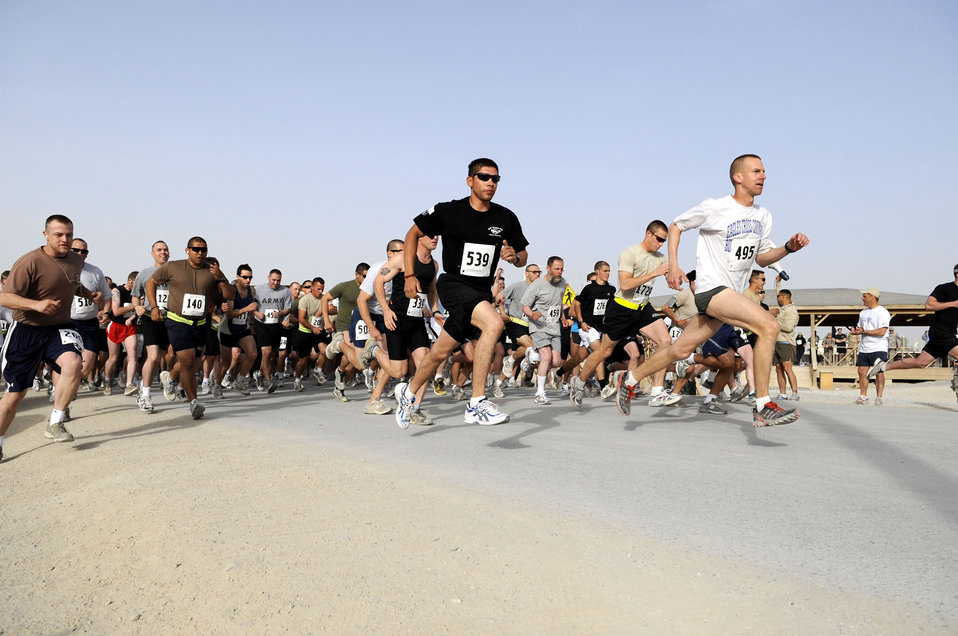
Kandahar members run for charity

More than 500 runners participated in the Explosive Ordnance Disposal Wounded Warrior 5K/10K run March 21, 2010, at Kandahar Airfield, Afghanistan.